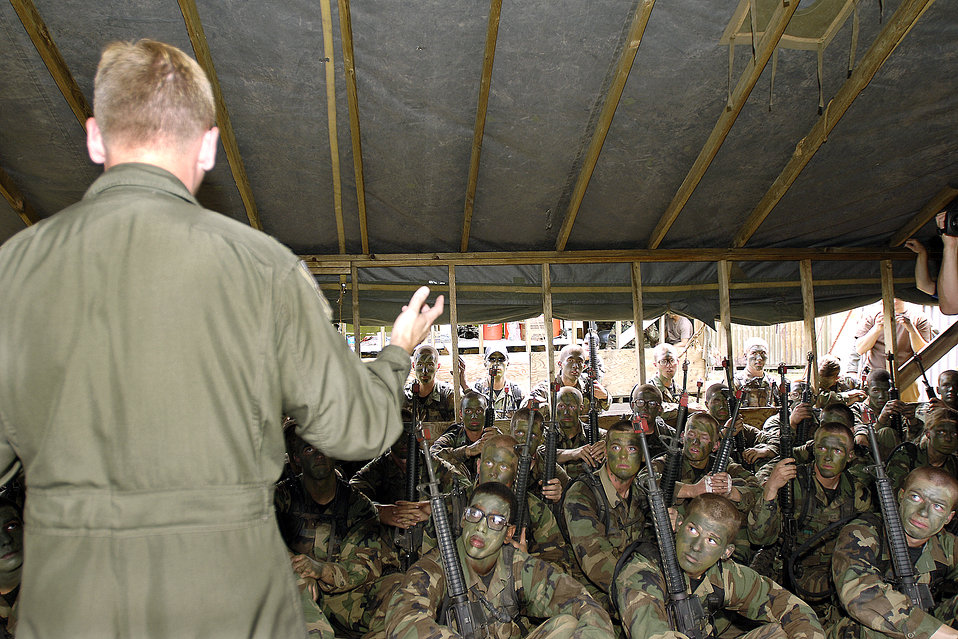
ROVER adds extra set of eyes to sky

Lt. Col. Gregory Harbin briefs basic cadets during a visit to the U.S. Air Force Academy July 28. During his visit, he demonstrated the Remote Operated Video Enhanced Receiver in action. The ROVER is basically a laptop with antennas that receives video captured by an unmanned aerial vehicle. The video shows real-time, nearby dangers allowing ground troops to make quick decisions regarding air strikes. Colonel Harbin is assigned to the 609th Combat Operations Squadron at Shaw Air Force Base, S.C.